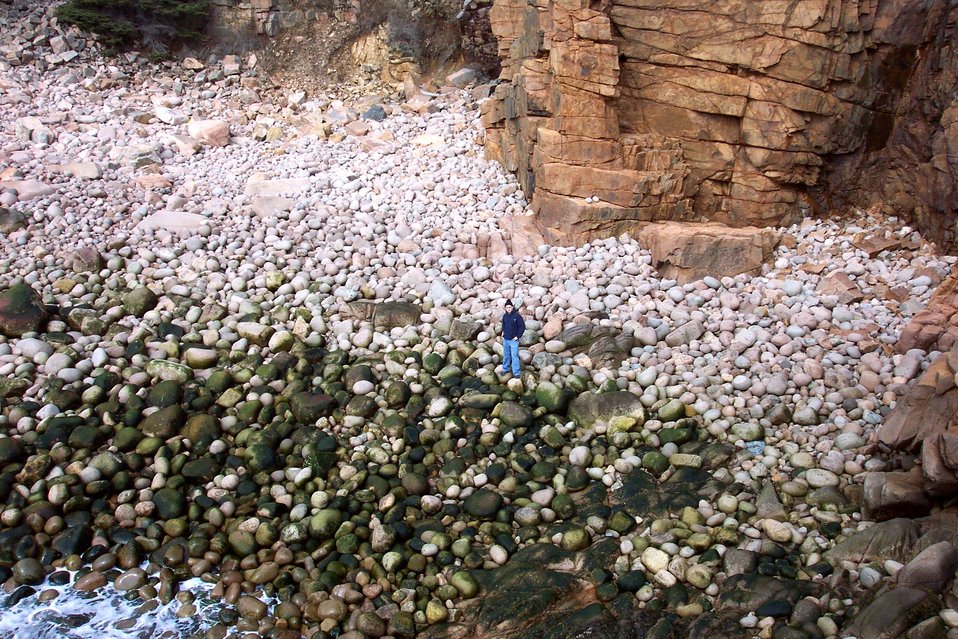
Human being in photo gives scale to 'big' sand. This is a boulder beach with large stone rollers rounded by the incessant pounding of North Atlantic swells. Some of these boulders are between 1/2 and 1 meter in diameter. Photo #3 of sequence.